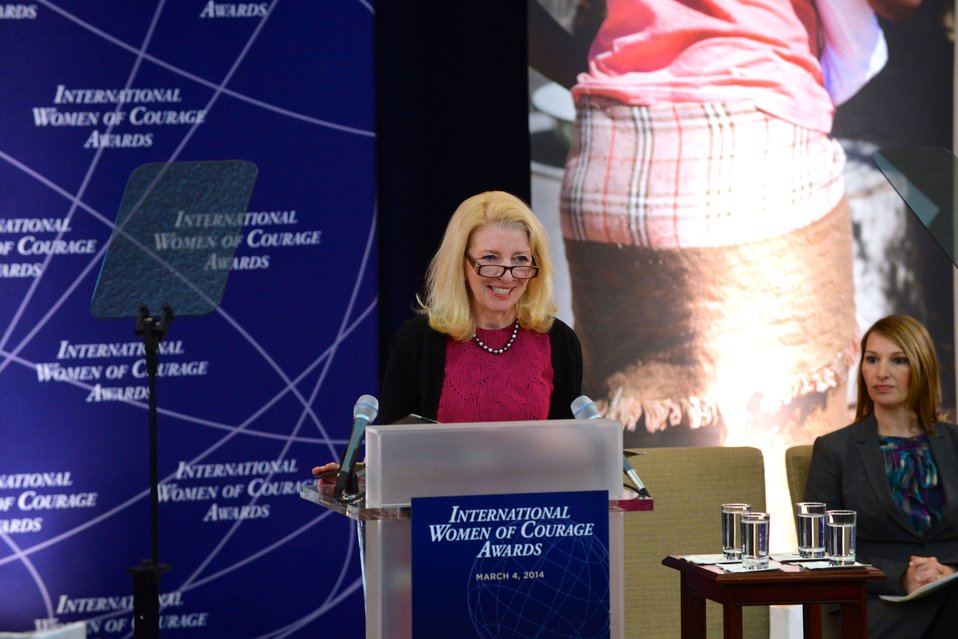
Ambassador Russell Delivers Remarks at the 2014 International Women of Courage Award Ceremony

U.S. Ambassador-at-Large for Global Women's Issues Catherine Russell delivers remarks at the Secretary of State’s International Women of Courage Award Ceremony at the U.S. Department of State in Washington, D.C., on March 4, 2014.